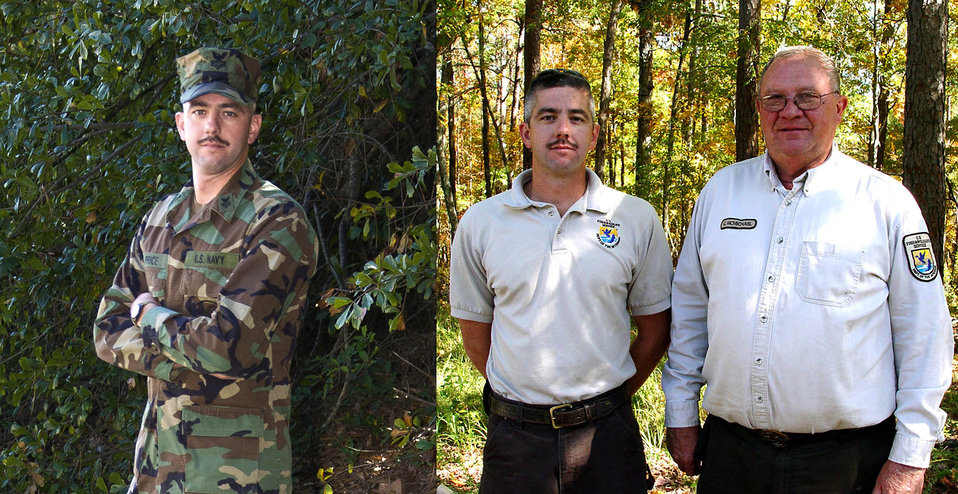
Toby Price and Glenn McMichael

Toby Price, Piedmont NWR, Georgia, has 16 years in the Navy Seabees thru Present Day. He served in Iraq in 2004 and has an upcoming Deployment to Afghanistan..
.
Glenn McMichael and Toby Price, Engineering Equipment Operators at Piedmont NWR. Glenn served the Army 18 months in Vietnam 1970-1971